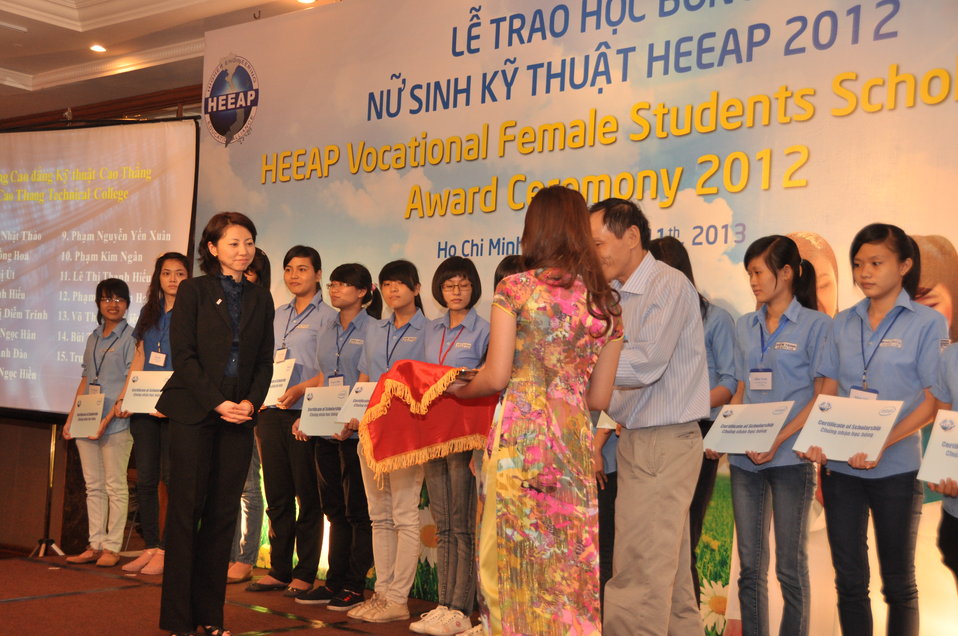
KC Choe of USAID Vietnam presents Female Vocational Student Scholarships

January 11, 2013, Ho Chi Minh City